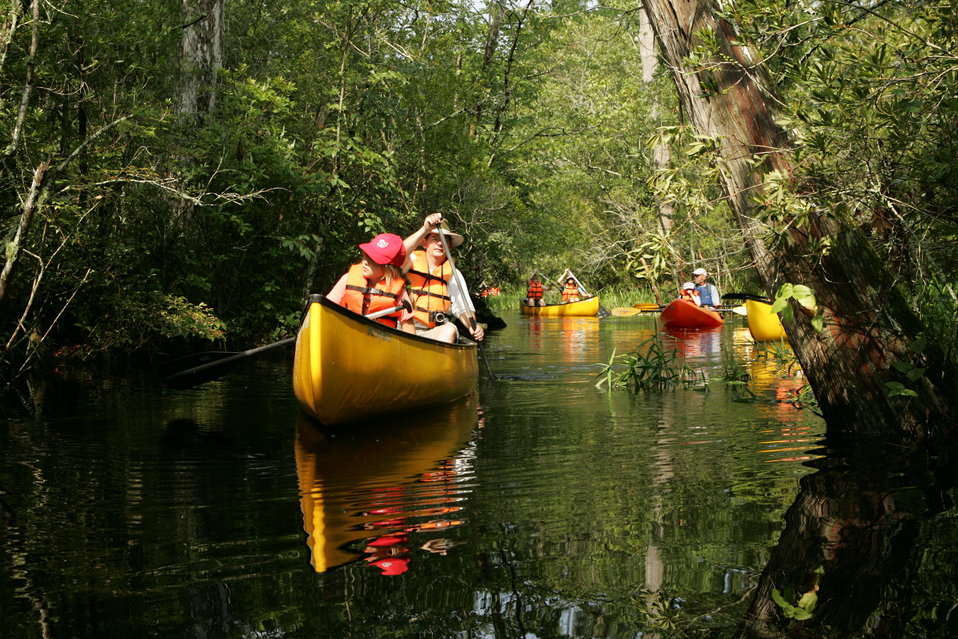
Paddling the canals of Alligator River National Wildlife Refuge offers many possibilities. You might see a black bear getting a drink along the water's edge. Or, you might have a river otter swim under your canoe. You might even see a resident alligator.